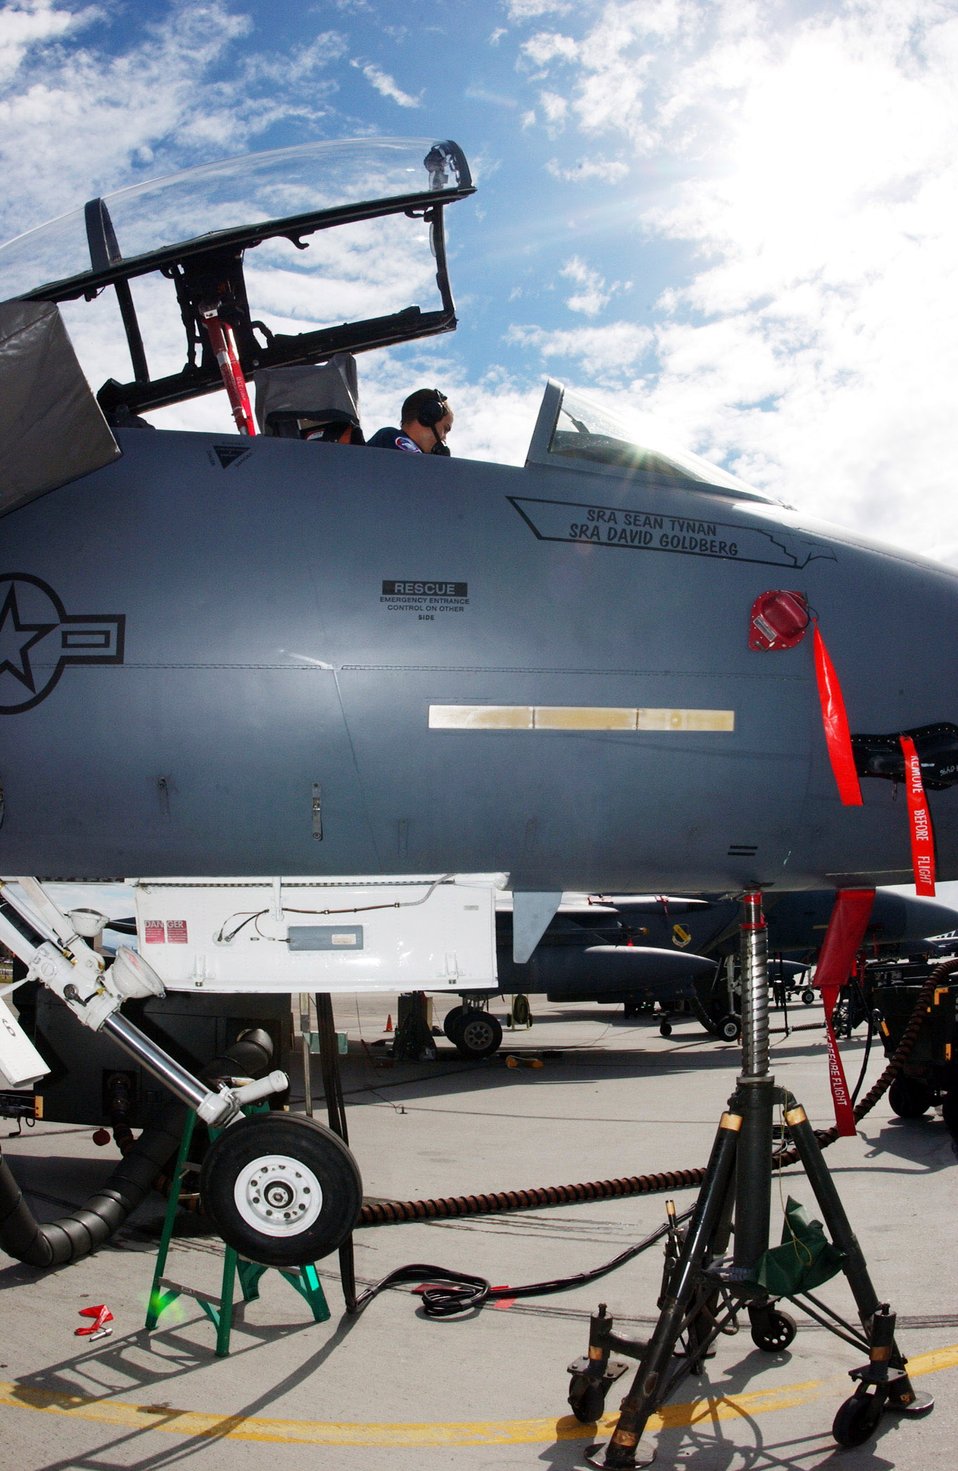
Maintaining aircraft at Red Flag-Alaska 2007

Airman 1st Class Harrison McMillan climbs into the cockpit as he and other maintainers toubleshoot the landing gear during a maintenance check July 12 on an F-15E Strike Eagle that is participating in Red Flag-Alaska 2007 at Eielson Air Force Base, Alaska. Red Flag-Alaska is a Pacific Air Forces-directed field training exercise for U.S. and coalition forces flown under simulated air-combat conditions. Airman McMillan is assigned to the 335th Aircraft Maintenance Unit at Seymour Johnson AFB, N.C.